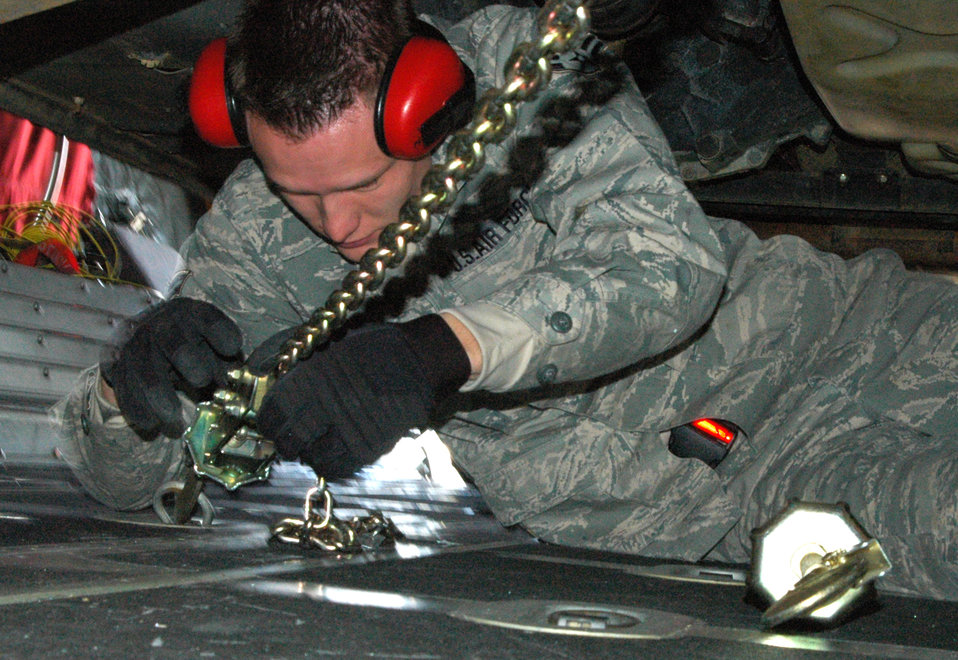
Connecting the links

Airman 1st Class Nathan Weiland tightens down the final chain to secure an Army Humvee to a C-130 Hercules Jan. 27, 2010 at Pope Air Force Base, N.C. Both the C-130 and its aircrew are deployed to Muniz Air Base, Puerto Rico. Airman Weiland is a cargo rigger with the 3rd Aerial Port Squadron.